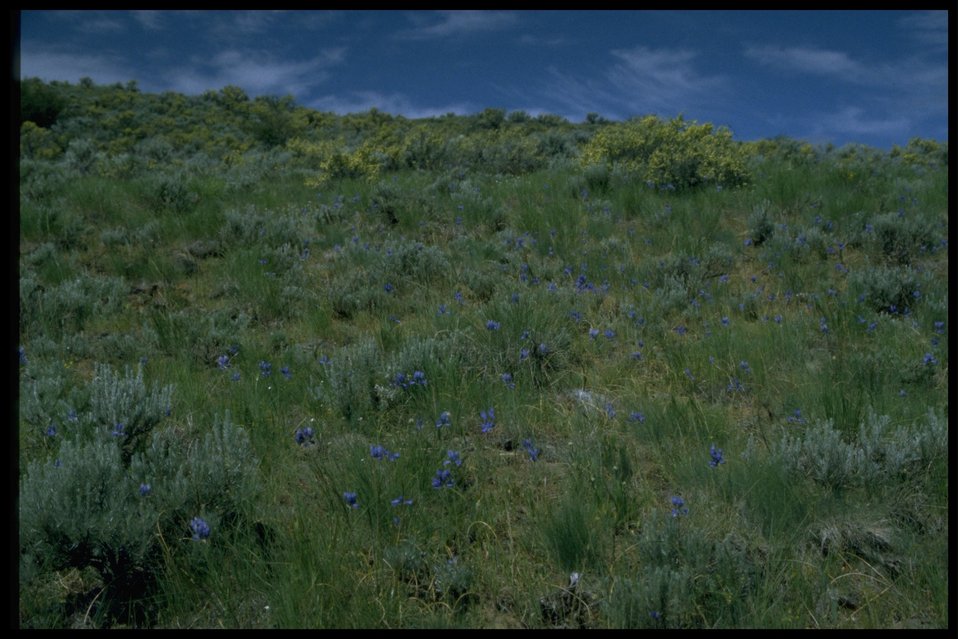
Farshot of Moist Swale with Douglas' Brodiaea wildflowers.